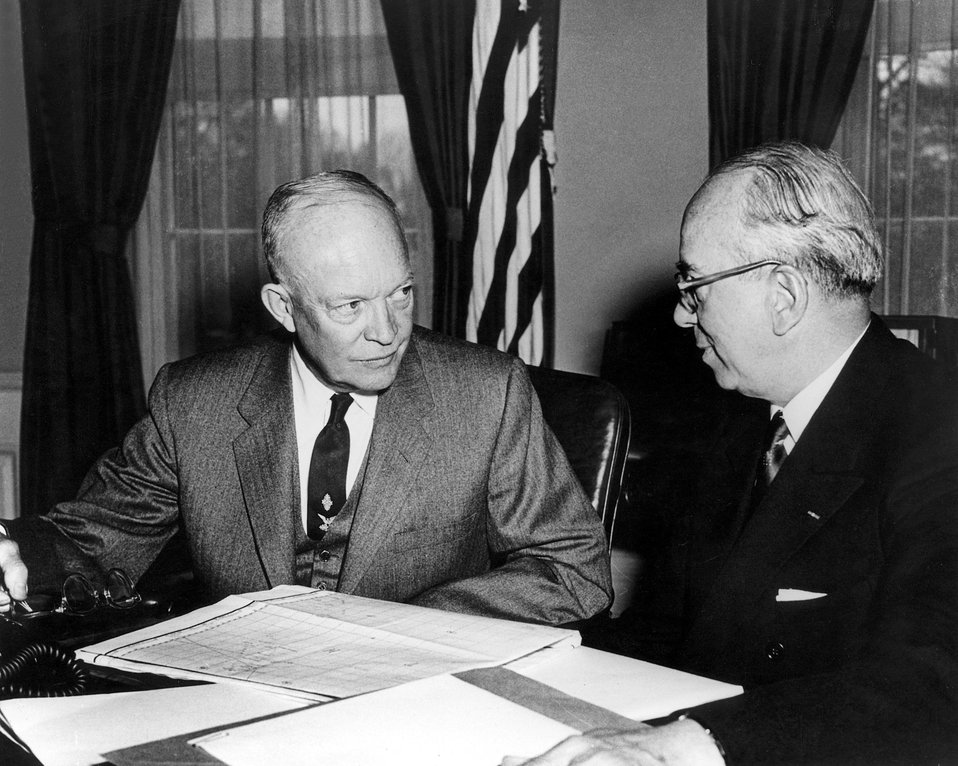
President Dwight D. Eisenhower receives a report from Lewis Strauss on Hydrogen Bomb tests in the Pacific, March 30, 1954.